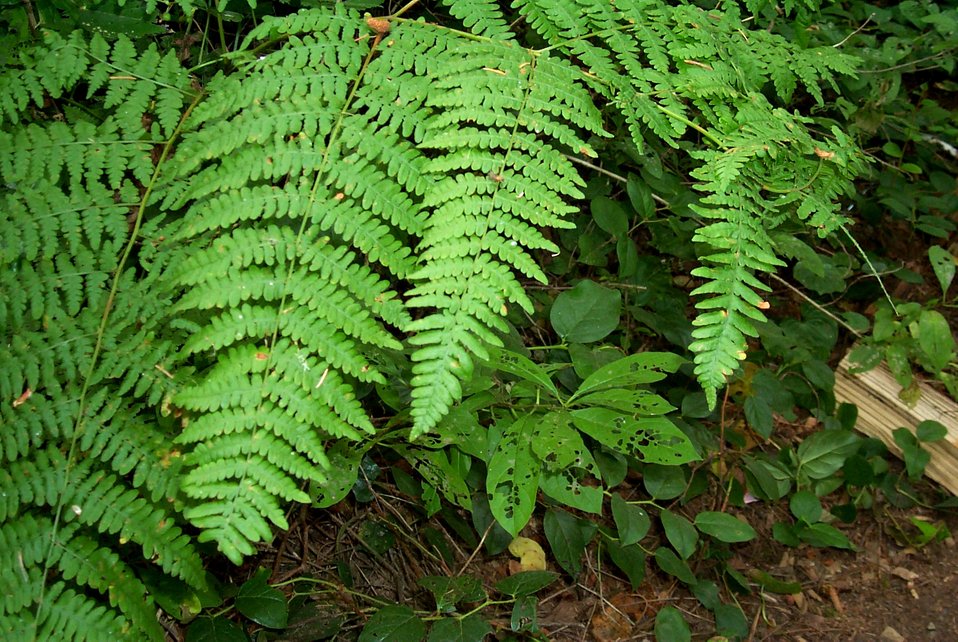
Graceful ferns adorn coastal forested regions in Oregon.